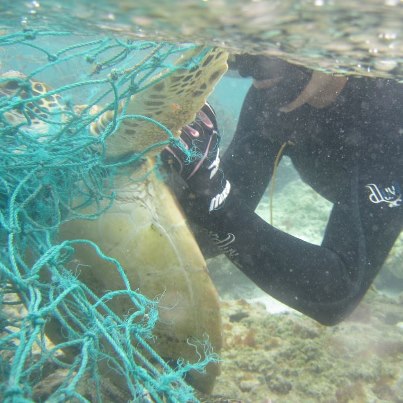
Freeing green sea turtle from net

Scientists rescued this green sea turtle from an abandoned fishing net and collected 50 tons of marine debris on a month-long trip around Midway Atoll Refuge and other islands in Papahānaumokuākea Marine National Monument in summer 2012. None of the debris appeared to come from the 2011 Japanese tsunami. The Fish and Wildlife Service and others took part in the NOAA-led mission. bit.ly/LD8mbU Photo: NOAA